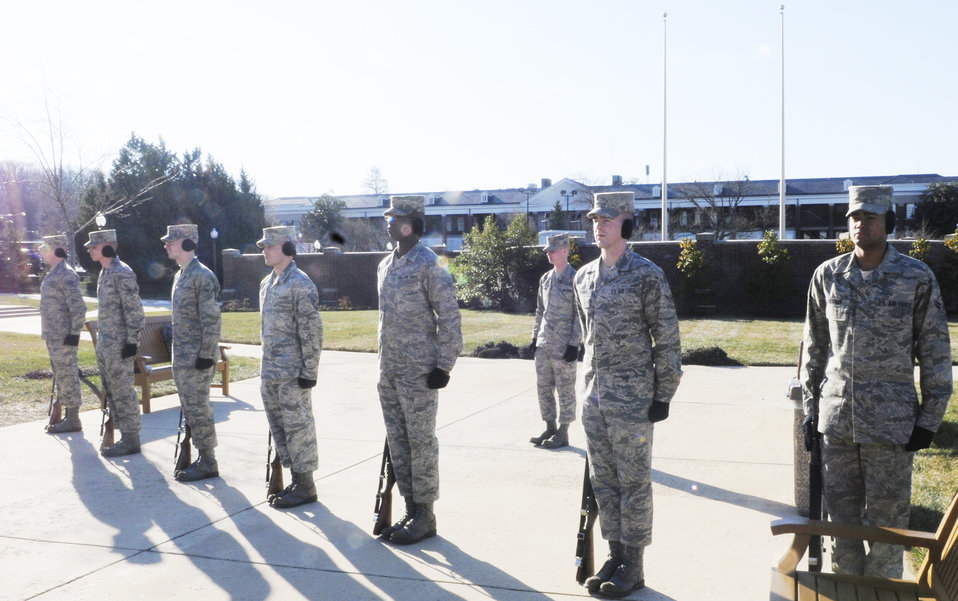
Honor Guard firing party

Airman 1st Class Zach Odom , a member of the U.S. Air Force Honor Guard firing party, calls commands during a practice session Jan. 7, 2010, at the Honor Guard compound at Bolling Air Force Base, D.C. The firing party performs the firing of three rifle volleys at military funerals. These teams, usually consisting of an odd number of three to seven members, fire three blank rounds in perfect unison to honor fallen service members. Currently, there are 60 Honor Guard members whose primary qualification is firing party, and teams perform at anywhere from 1,